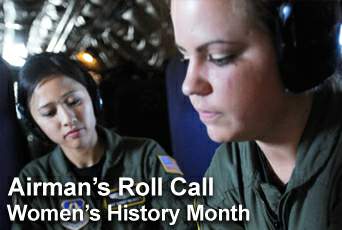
Airman's Roll Call: Women's History Month

This week's Airman's Roll Call focuses on Women's History Month and the accomplishments women have made in the Air Force.